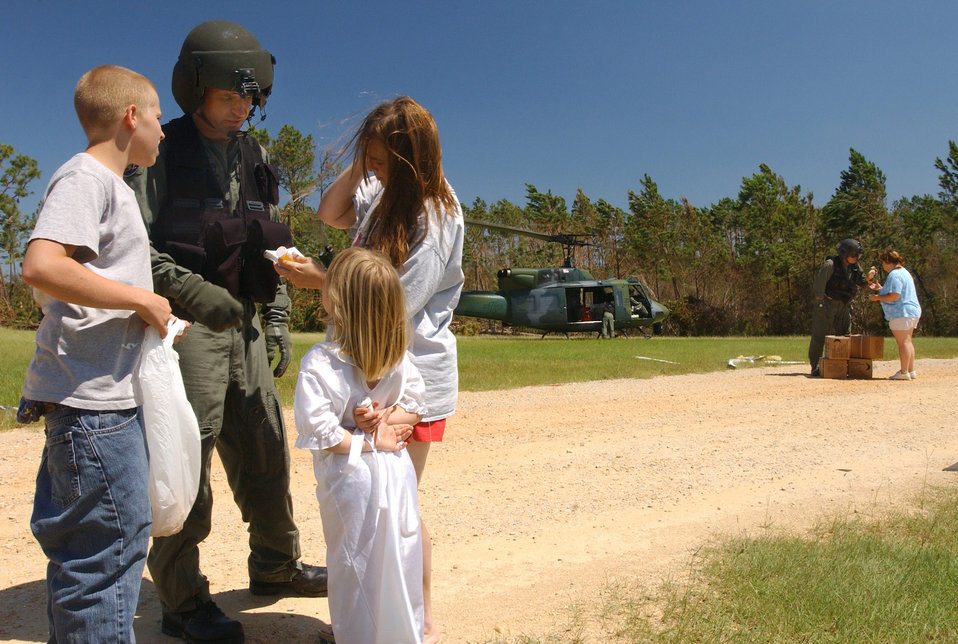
Pharmacy to go

MISSISSIPPI -- Master Sgt. Curtis Kinnick takes prescription information from a mother and daughter in need of medication Sept. 7. The medical technician from the 620th Air Expeditionary Squadron, Columbus Air Force Base, Miss., is part of a UH-1N Huey helicopter crew that flies to outlying areas of southern Mississippi delivering food, water and supplies as well as medical attention to people affected by Hurricane Katrina.